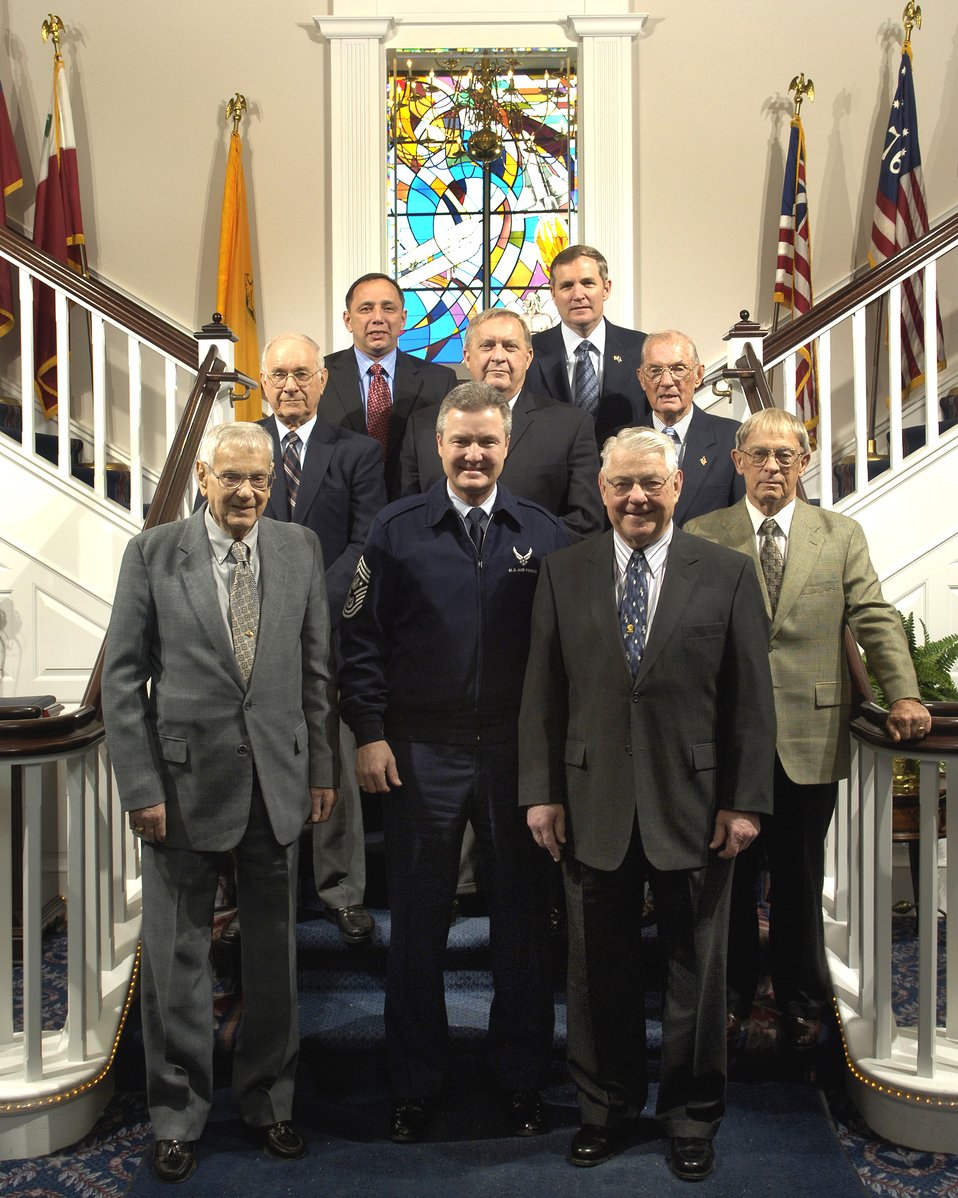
A gathering of chiefs

WASHINGTON (AFPN) -- Former Chief Master Sergeants of the Air Force pose for a group photo before meeting with enlisted members of the National Capital Region at Bolling Air Force Base, Washington, D.C., Feb. 14. From the left, front row, are Paul W. Airey, Gerald R. Murray, Robert D. Gaylor, Gary R. Pfingston, Sam E. Parish, James C. Binnicker, James M. McCoy, Frederick J. Finch and Eric W. Benken. Eight of the 13 former chiefs are meeting this week in the Pentagon with Chief Murray, who is the 14th chief master sergeant of the Air Force.